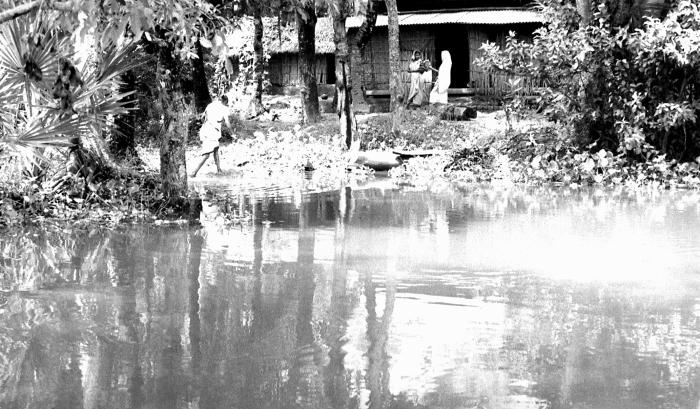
This photograph depicted a Bangladesh village situated on the banks of a river, which made it accessible to both river and land transport. Much of the Bangladesh culture is based on riverine activities such as fishing and transport of goods. This image was part of a series provided by Dr. Stan Foster, and captured by Pierre Claquin, M.D., B.A.C., who at the time was a member of the World Health Organization's Smallpox Eradication Program. It was part of a series photographed by former E.I.S. officer, Stanley O. Foster M.D., M.P.H., and was one of a series entitled 'The Story of One Smallpox Jeep', which depicted the travails faced by the jeep, and its occupants of public health practitioners, as they road through the Bangladesh countryside in an attempt to eradicate smallpox from the country.